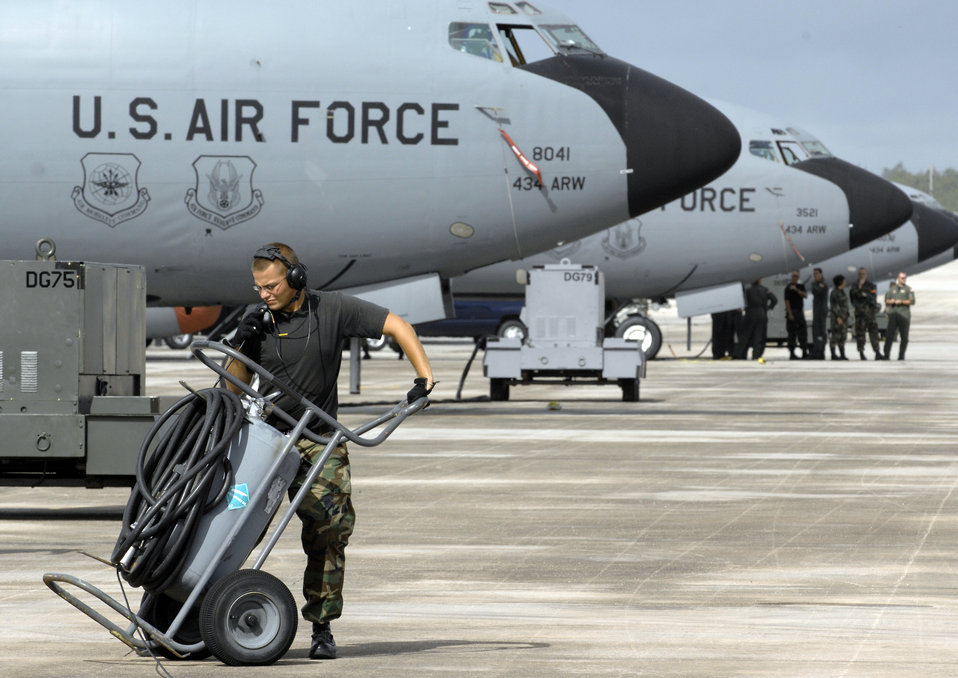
Reserve Airmen complete deployment to Guam

Senior Airman David Engelhardt moves a fire bottle April 29 at Andersen Air Force Base, Guam. Airman Englelhardt and other members from the 434th Air Refueling Wing from Grissom Air Reserve Base, Ind., recently completed a deployment to Andersen in support of Pacific Refueling Operations.